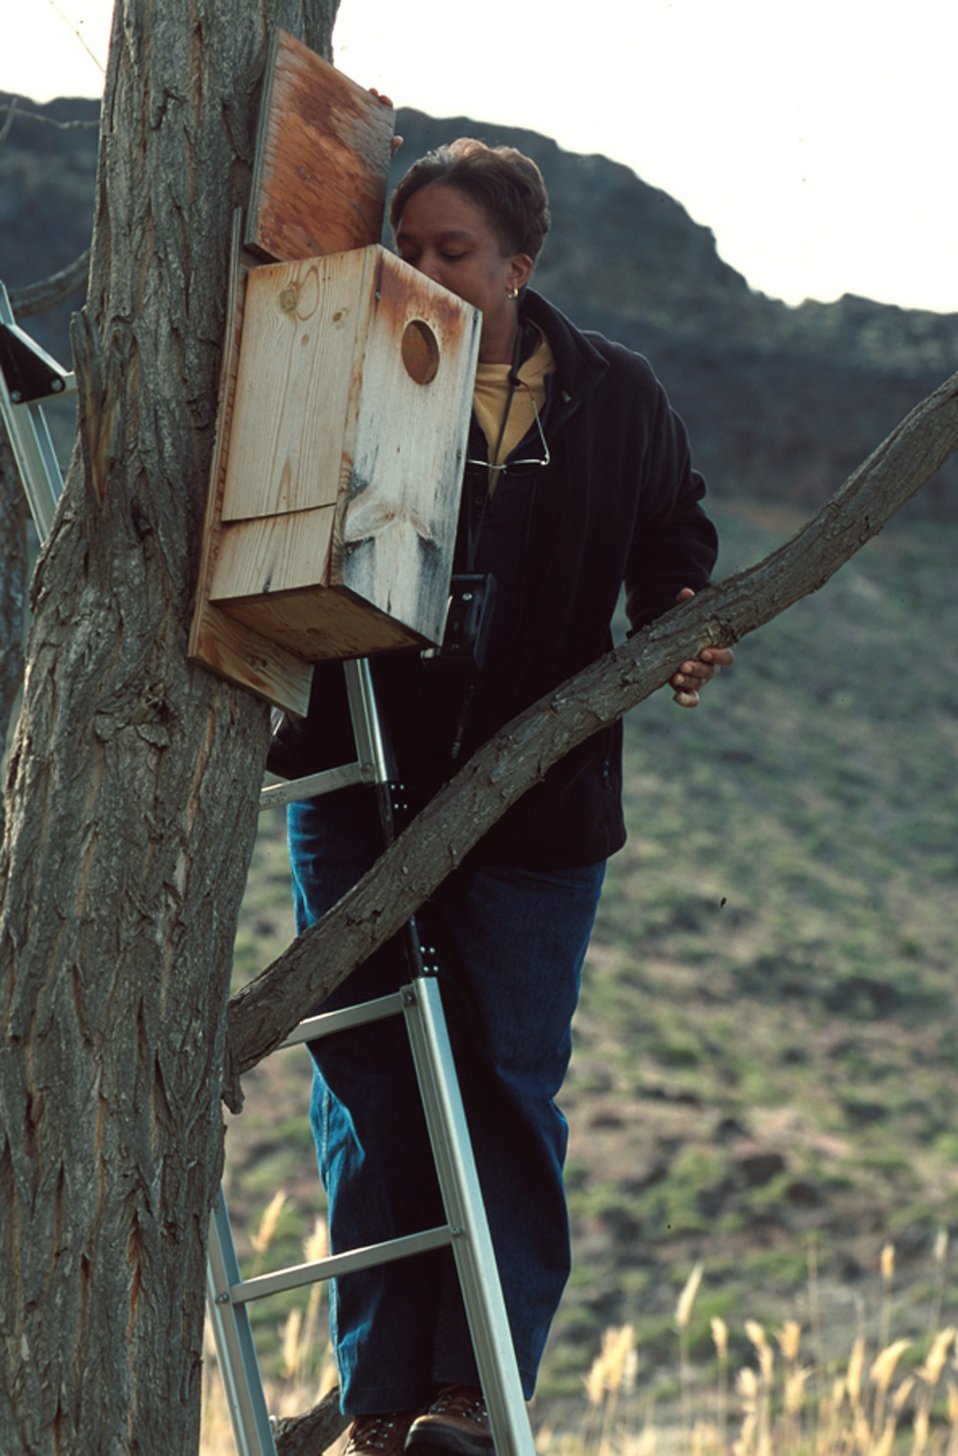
Inventroy of man-made box for raptors Owyhee Field Office LSRD Lower Snake River District